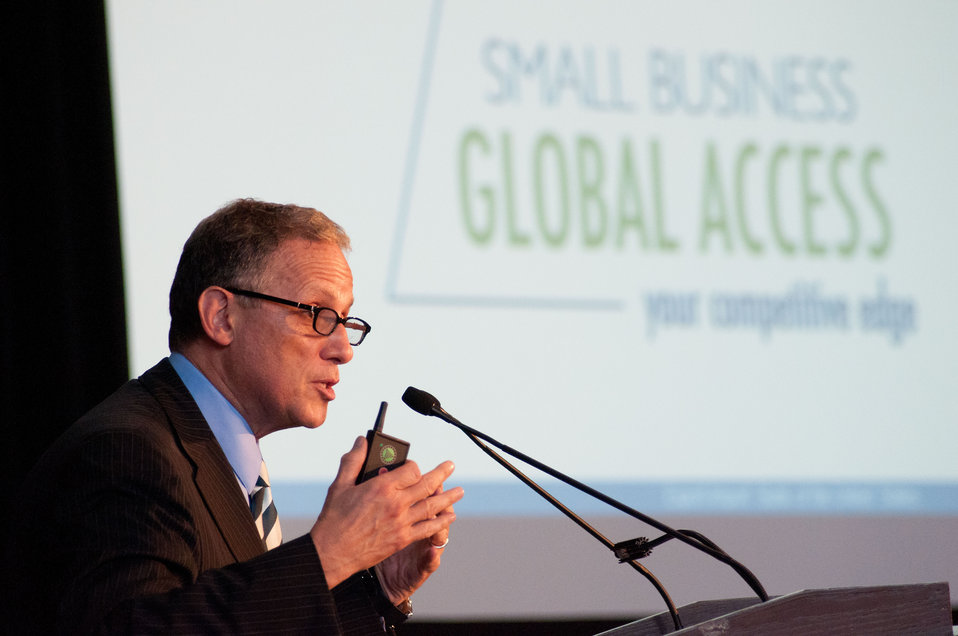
Fred Hochberg, Chairman of the Export Import Bank of the United States speaks at the National Export Initiative (NEI) Small Business Tour in Milwaukee, WI, on Wednesday, August 3, 2011. An important goal of the NEI is to provide additional assistance to small and medium-sized businesses, which are major drivers of job creation. The NEI is assisting small and medium-sized businesses win more foreign government contracts, find buyers worldwide, participate in more trade missions and trade shows, receive more export financing, and learn new ways to sell products and services overseas.